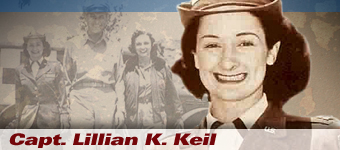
Col. Susan Helms history spotlight graphic .